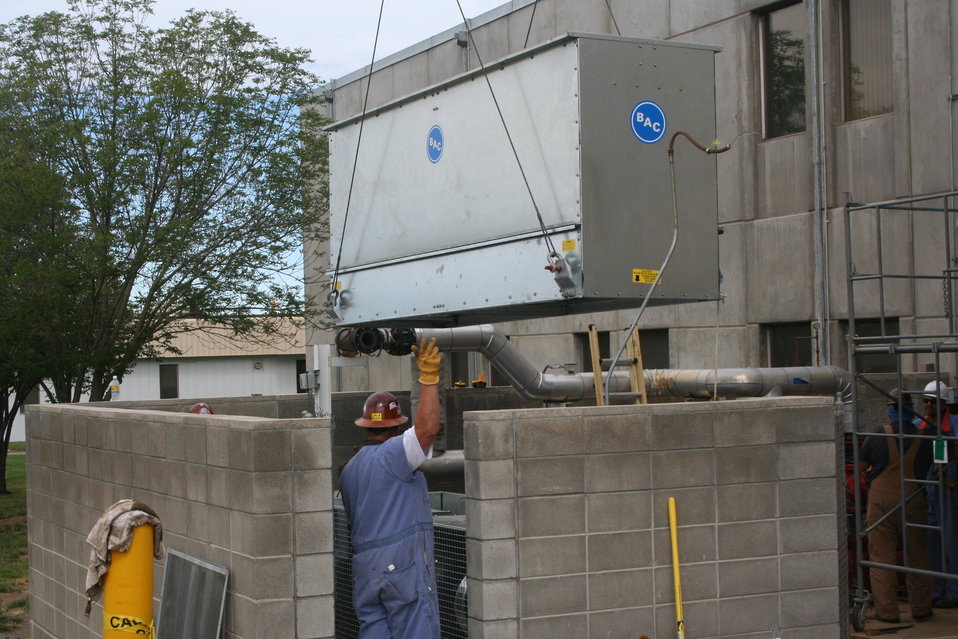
New cooling tower - Hanford ORP

Facilities Maintenance Manager Chris Woehle's crew spent an entire weekend installing a new, state-of-the art cooling tower at the 2750-E building, bringing relief to the hundreds of employees who work there. The project was paid for with Recovery Act funding.